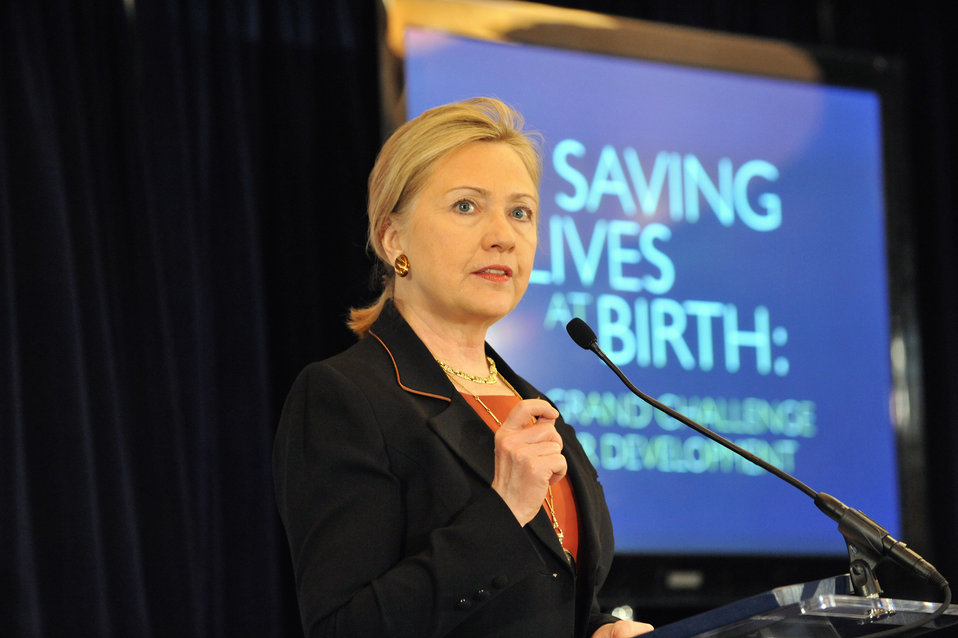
Secretary Clinton Delivers Remarks on Maternal and Child Health

U.S. Secretary of State Hillary Rodham Clinton delivers remarks at the launch of a Global Partnership on Maternal and Child Health led by USAID, the Government of Norway, The Bill and Melinda Gates Foundation, Grand Challenges Canada, and the World Bank, in the Ronald Reagan Building in Washington, D.C., on March 9, 2011.